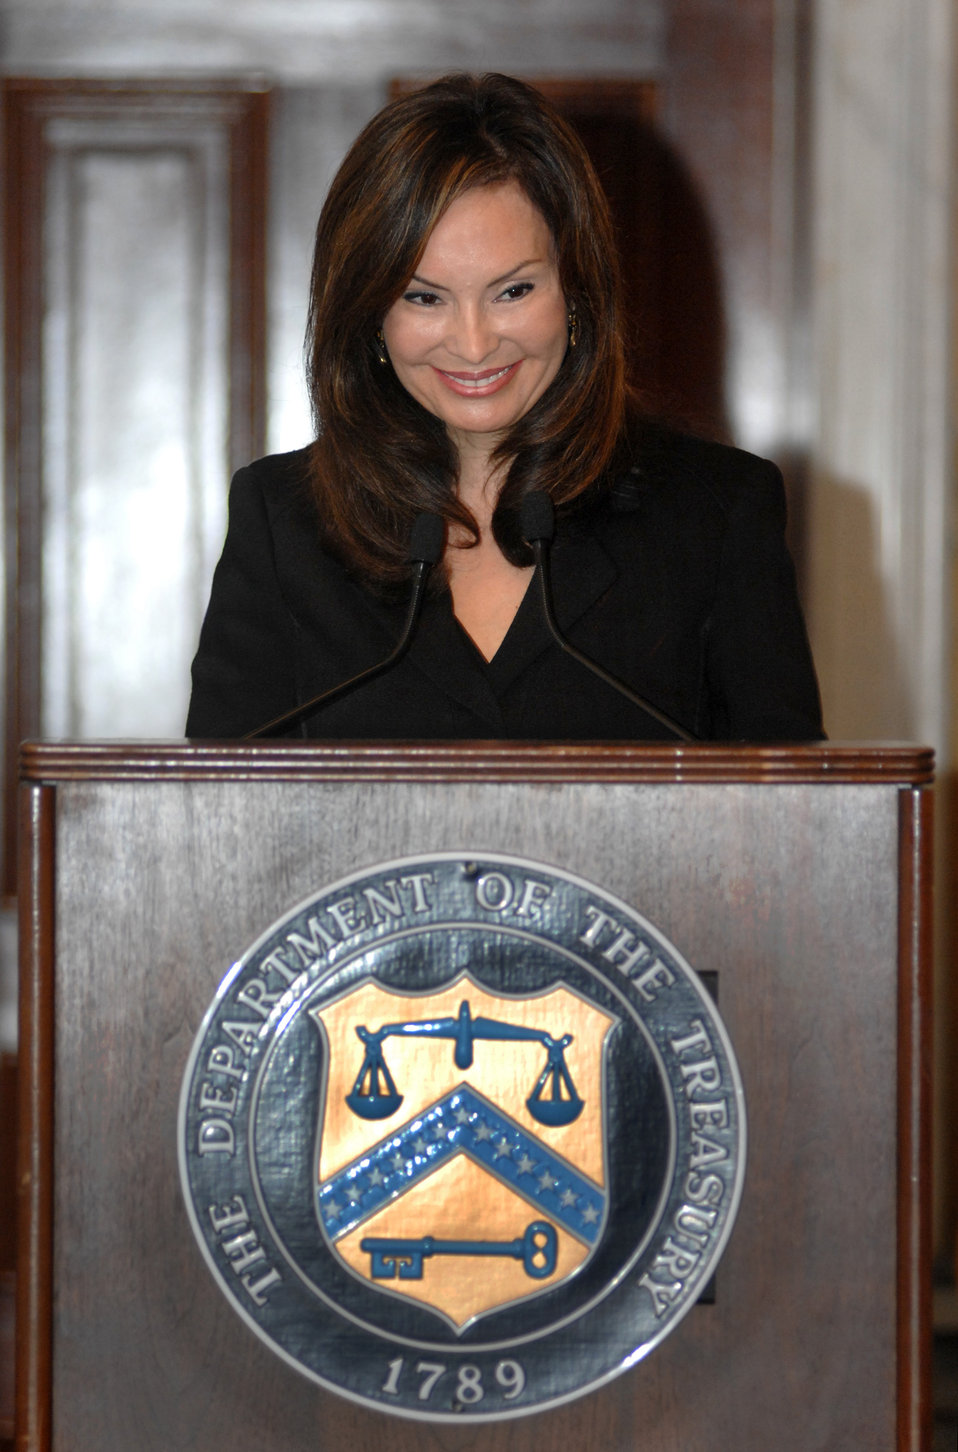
Rios swearing-in

Rios giving remarks on August 20, 2009 at her swearing-in ceremony.